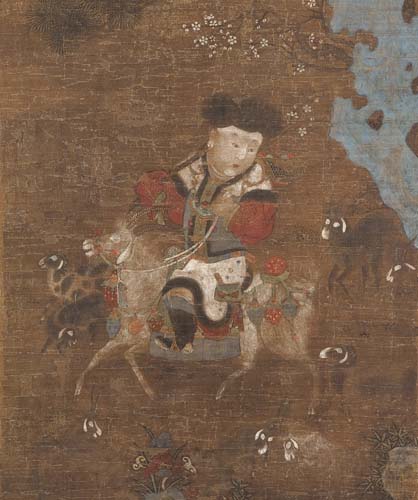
Boy Riding a Goat, 15th-century Ming dynasty Chinese scroll painting by Lü Wenying, Honolulu Academy of Arts